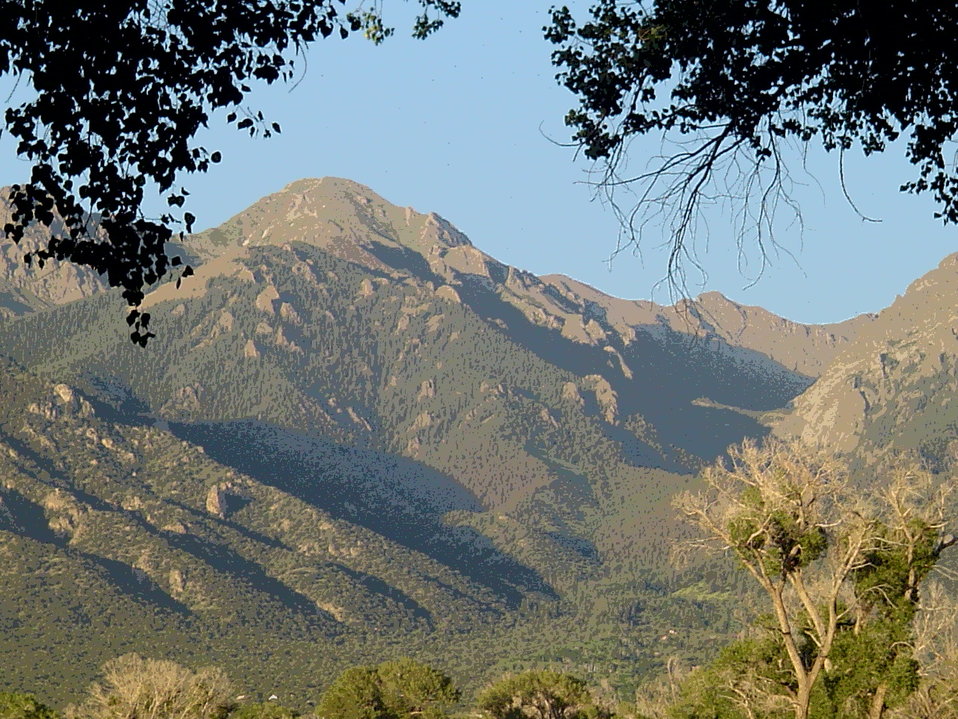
Sangre de Cristo Mtns

This photo, taken from the Baca National Wildlife Refuge headquarters building, features the Sangre de Cristo mountains in Colorado's San Luis Valley.

Credit: Jimi Metzger / USFWS

Photo Contest Entry #168